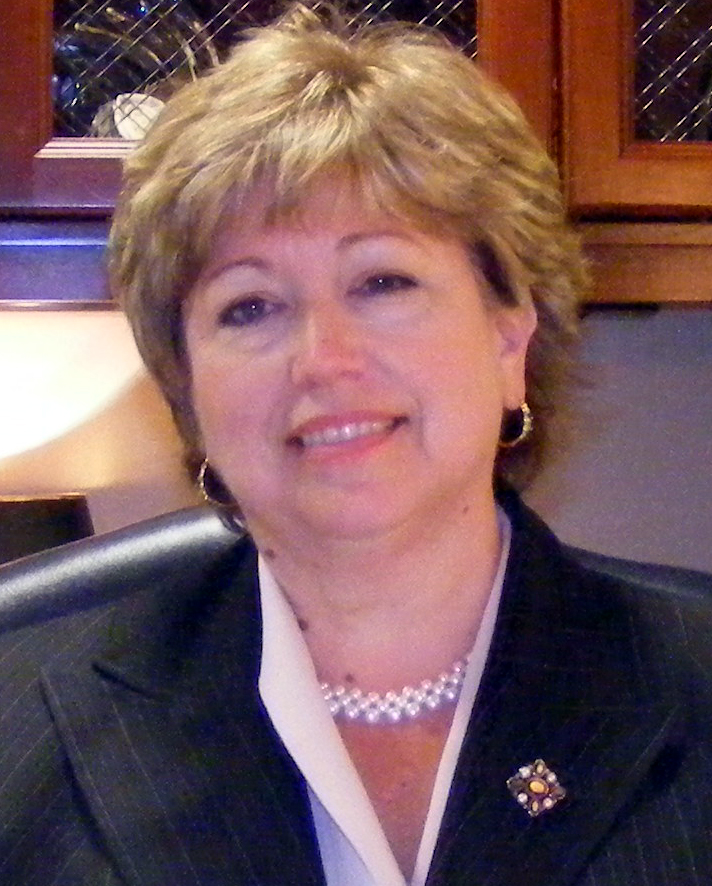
American politician Kathleen M. Dumais (D), member of the Maryland House of Delegates since 2002.